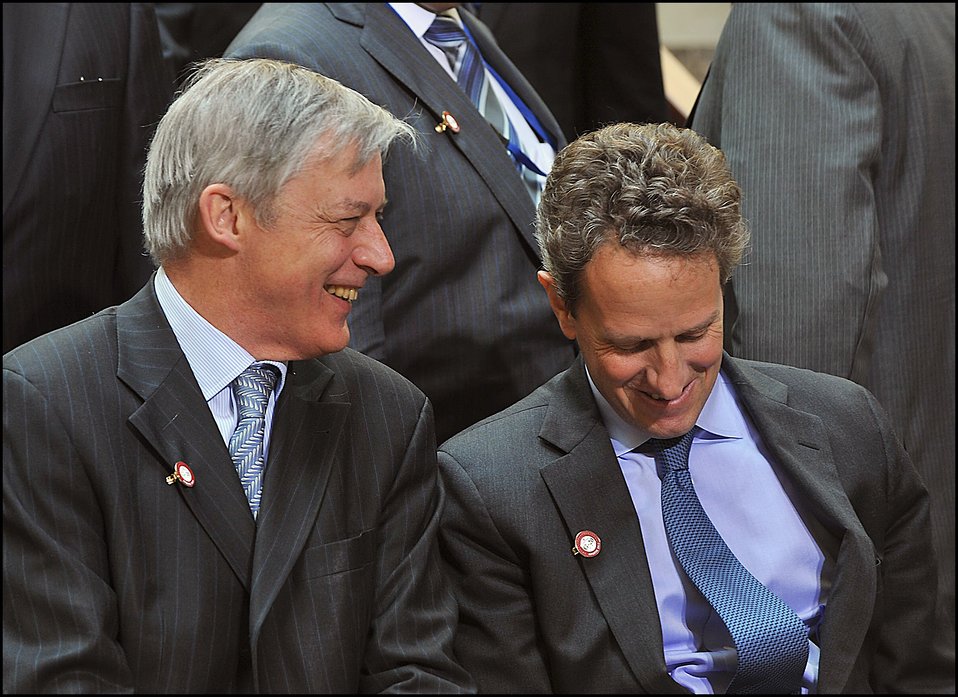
G-20 Finance Ministers and Central Bank Governors' Meeting

Secretary Geithner and Christian Noyer, Governor of the Central Bank of France, at the G20 meeting of finance ministers and central bank governors at the International Monetary Fund (IMF).